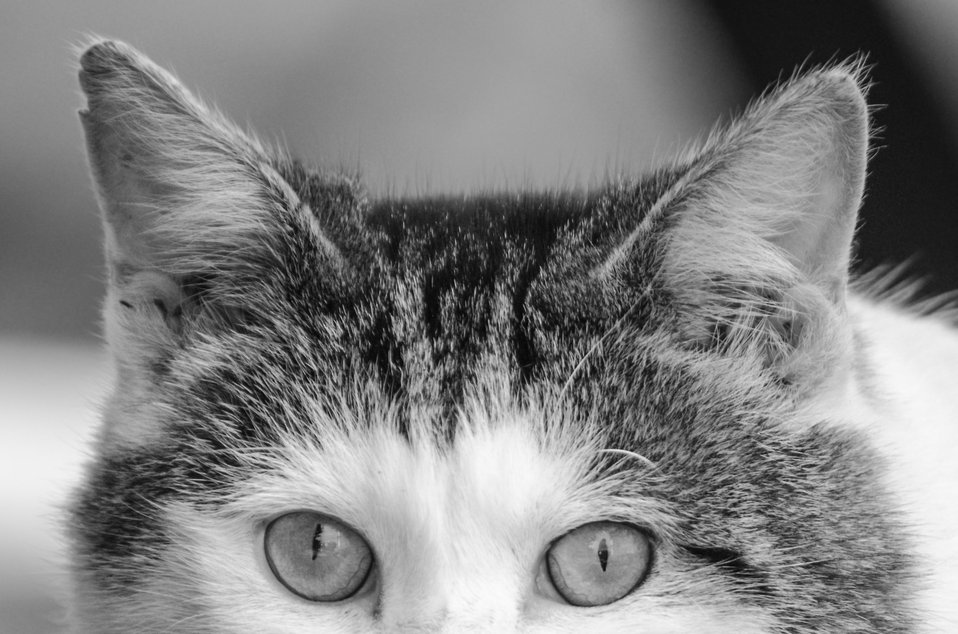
Cat - animals.